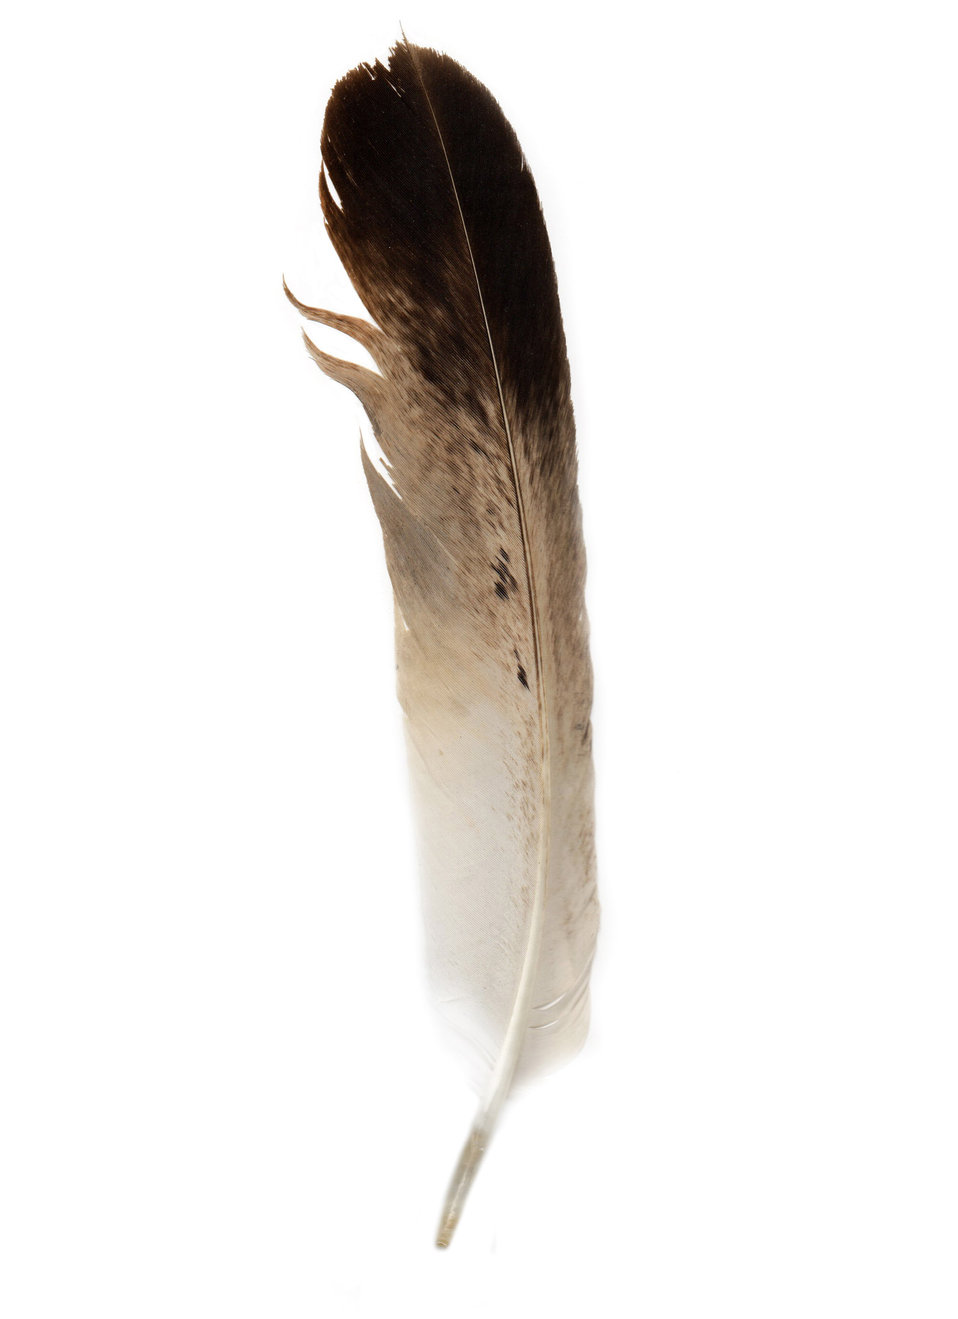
Bird feather

Scan image of bird feather.